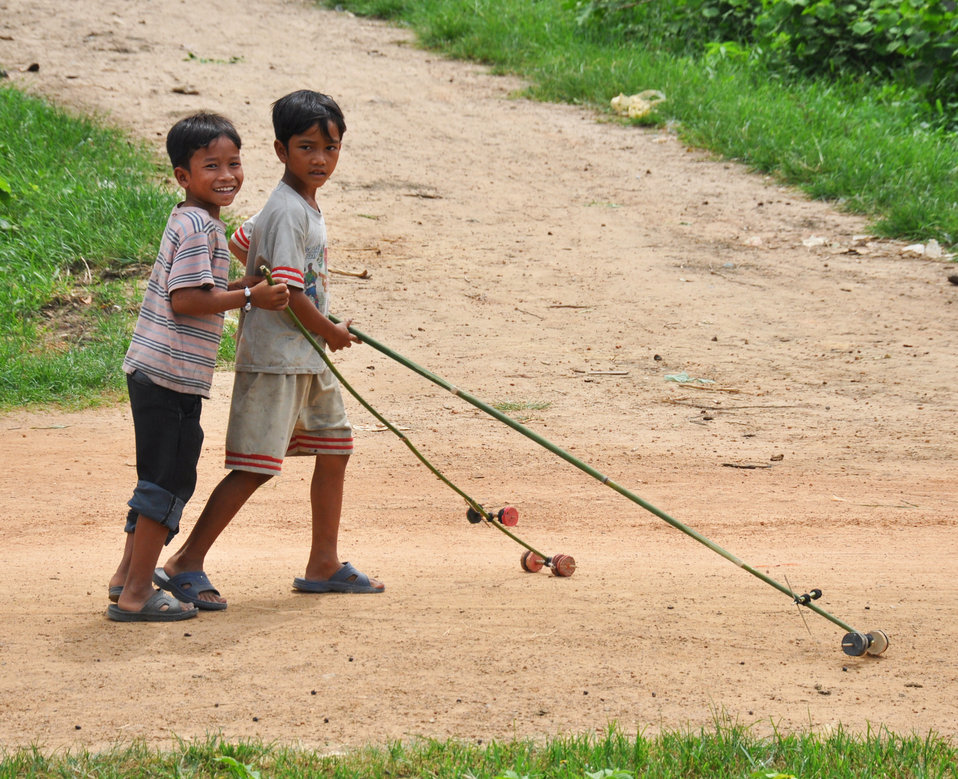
USAID supports cocoa farming communities in Central Vietnam